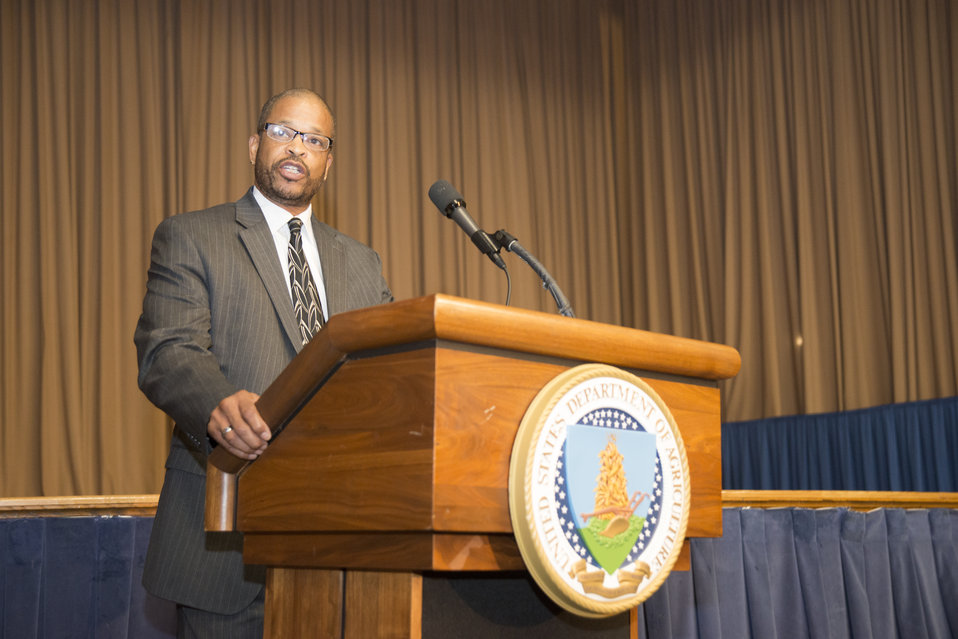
U.S. Department of Agriculture (USDA) Chief Human Capital Office William P. Milton, JR. makes opening remarks at the 2014 Lesbian/Gay/Bisexual/Transgender (LGBT) Pride Observance event held in the Jefferson Auditorium at USDA in Washington, D.C. on Thursday, Jun. 5, 2014.